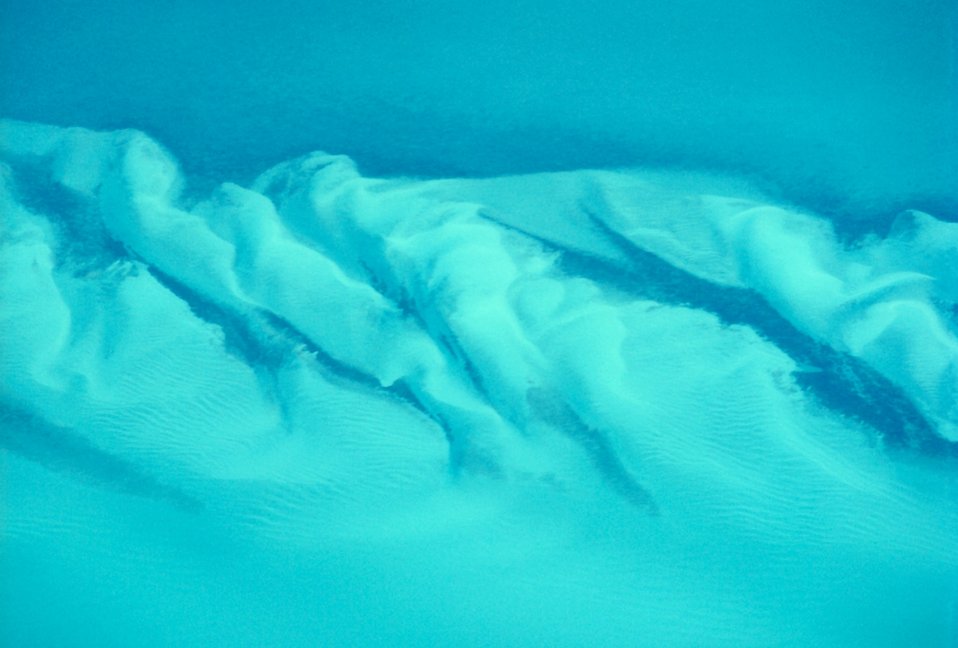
Project Cement #4.